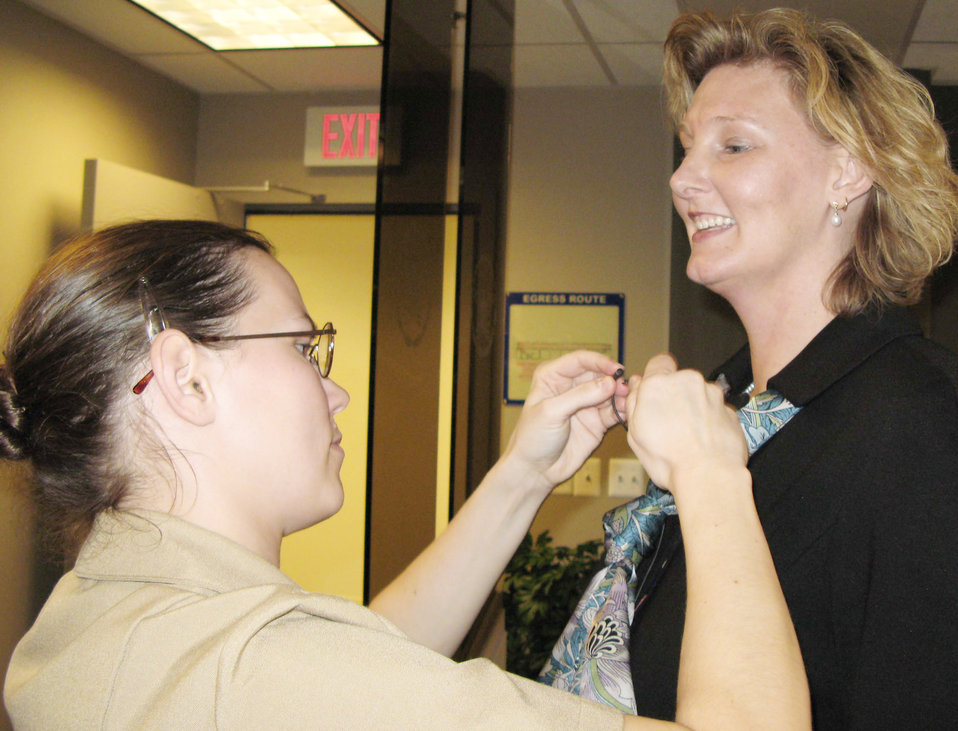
DOD's top teachers

Susan S. Morris, Department of Defense Education Activity Teacher of the Year for 2010, holds still as Pentagon Channel reporter Navy Petty Officer 1st Class Kristina Moore applies a microphone at the Pentagon, Nov. 17, 2009.